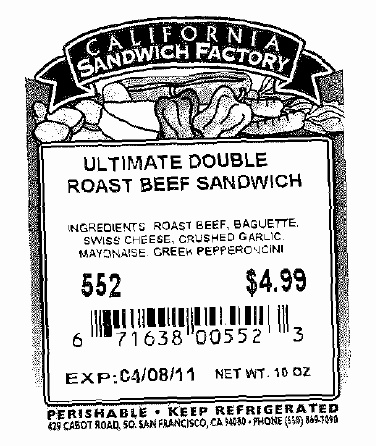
RECALLED - Sandwiches

April 12, 2011 - Product Recall - A-1 Sandwich Company Voluntarily Recalls Sandwiches with Undeclared Allergens.